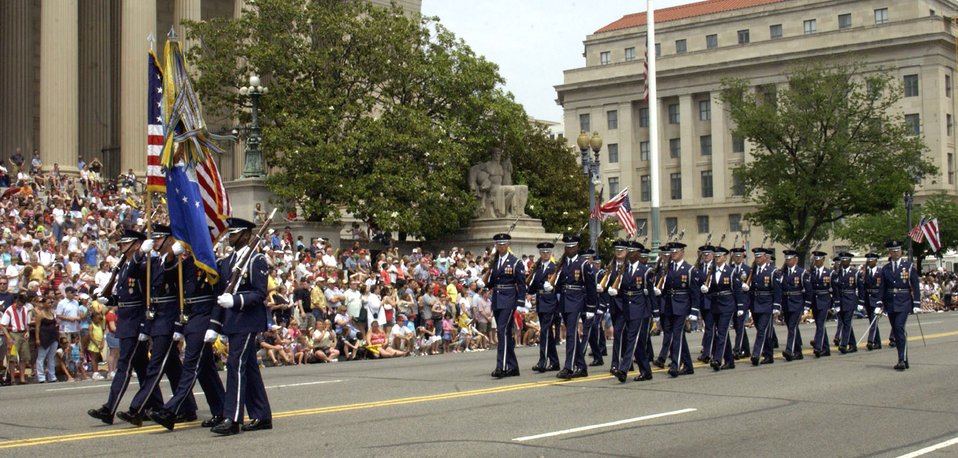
Memorial Day activities

Airmen from the Air Force Honor Guard march in front of the National Archives during the National Memorial Day Parade May 28 in Washington, D.C. The parade highlighted the Air Force's 60th anniversary as a separate service. Maj. Gen. Robert L. Smolen, the Air Force District of Washington commander, served as the grand marshall for the parade; Secretary of the Air Force Michael W. Wynne and Chief Master Sgt. of the Air Force Rodney J. McKinley also attended.